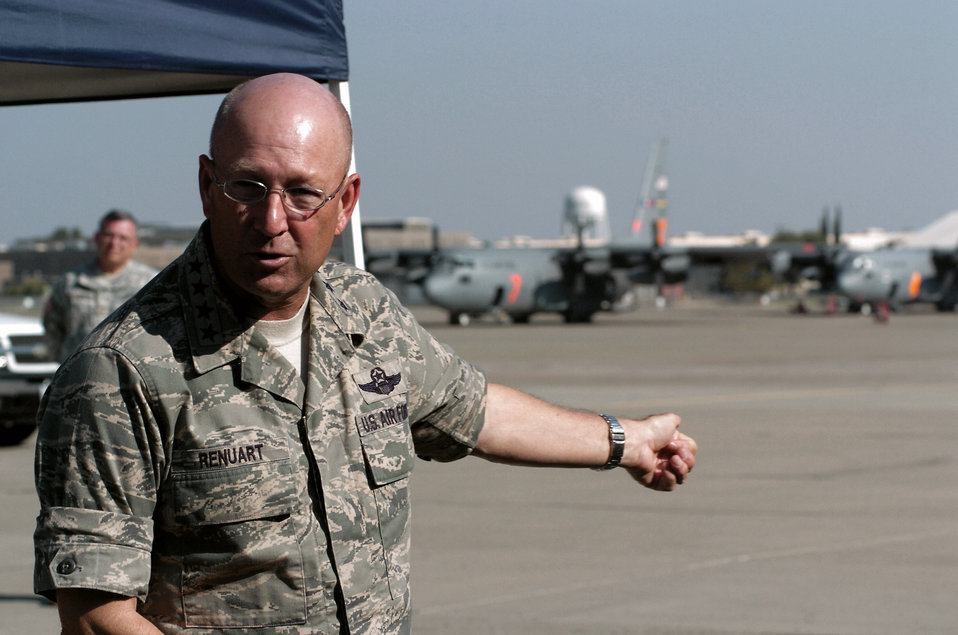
California firefighting commander: 'Great job' by Airmen

Gen. Victor E. Renuart Jr. motions to two of the C-130 Hercules aircraft assigned to the 302nd Air Expeditionary Group during his July 16 visit to McClellan Airfield, Calif. He spoke to Airmen of the 302nd AEG and members of the U.S. Forest Service and California Department of Forestry and Fire Protection, congratulating them all on a job well done in support of California's firefighting operations. General Renuart is the the commander of U.S. Northern Command.